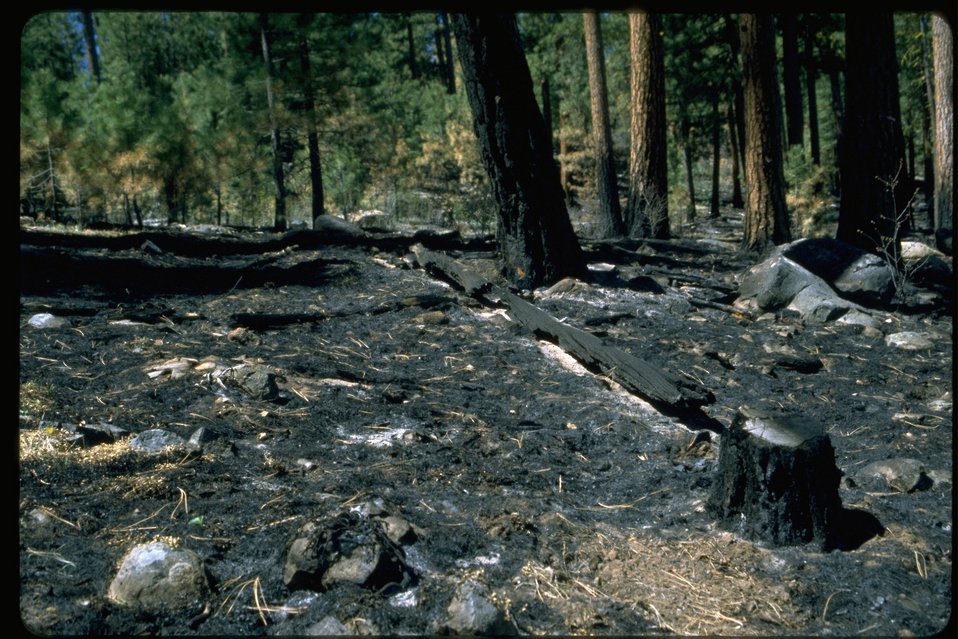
Prescribed burn area CCC (Civilian Conservation Corps) road near Barnes Valley.